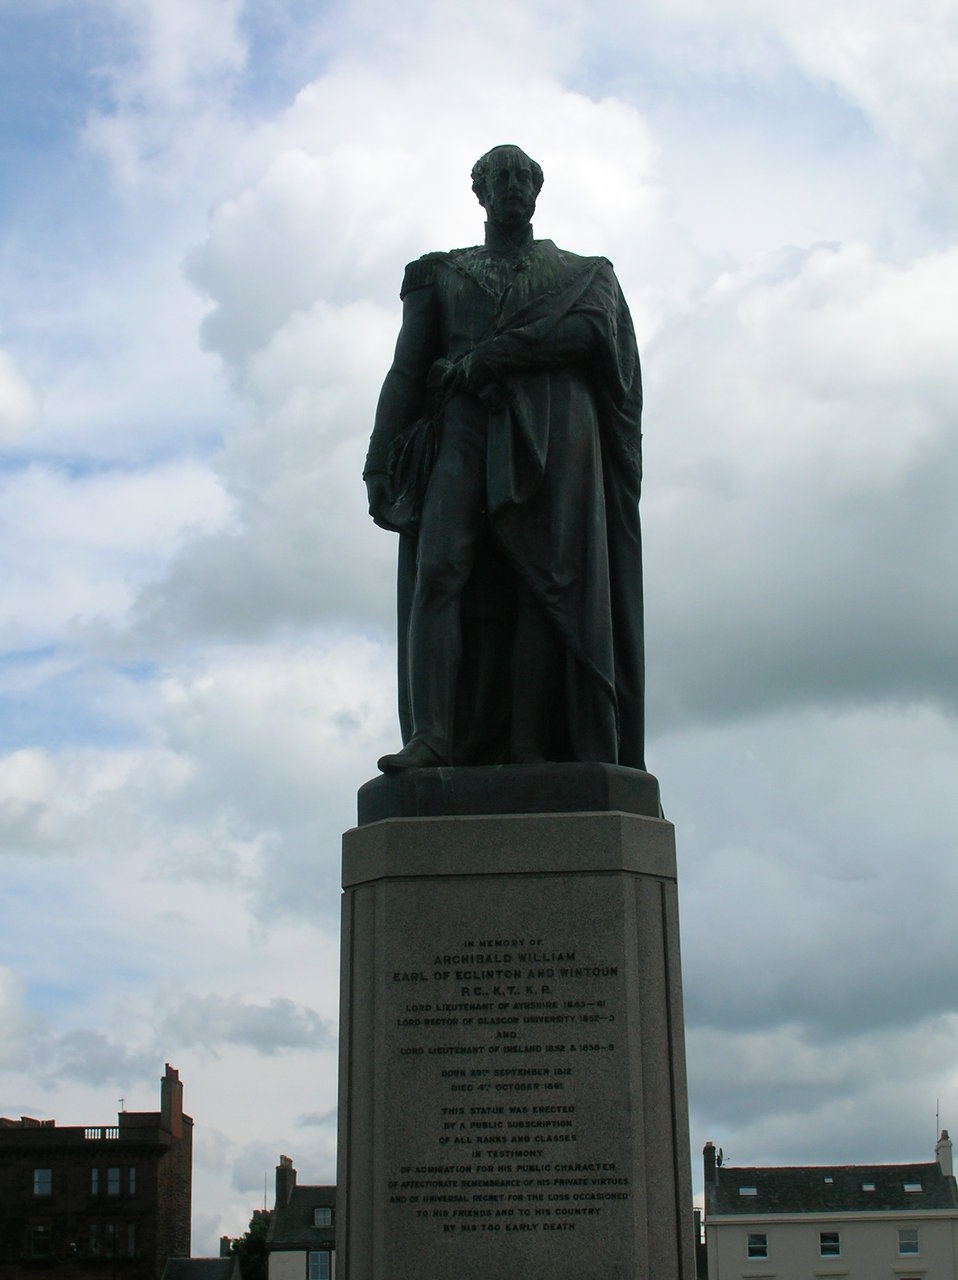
A statue of the 13 Earl of Eglinton, Wellington Aquare, Ayr, Scotland.